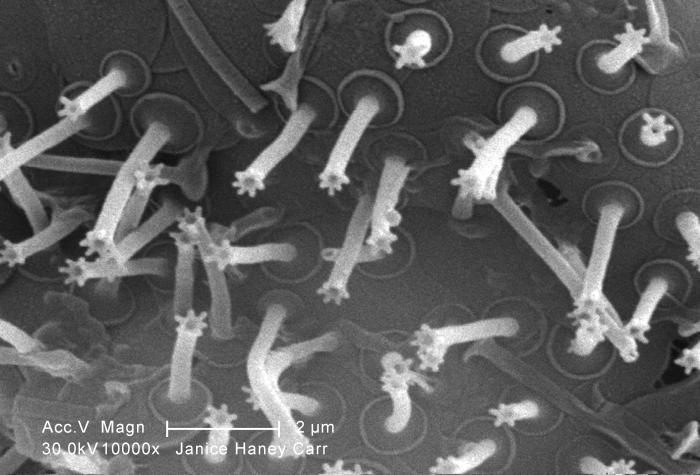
Under a moderately-high magnification of 2500X, this digitally-colorized scanning electron micrograph (SEM) of an untreated water specimen extracted from a wild stream mainly used to control flooding during inclement weather, revealed the presence of unidentified organisms, which included bacteria, protozoa, and algae. In this particular view, a microorganism is featured, the exterior of which is covered by numerous projections imparting an appearance of a sea urchin. This microscopic 'pin cushion' was teathered to its surroundings by a biofilm within which many bacteria, and amoeboid protozoa could be seen enmeshed as well. See PHIL 11790 for a digitally-colorized version of this image.